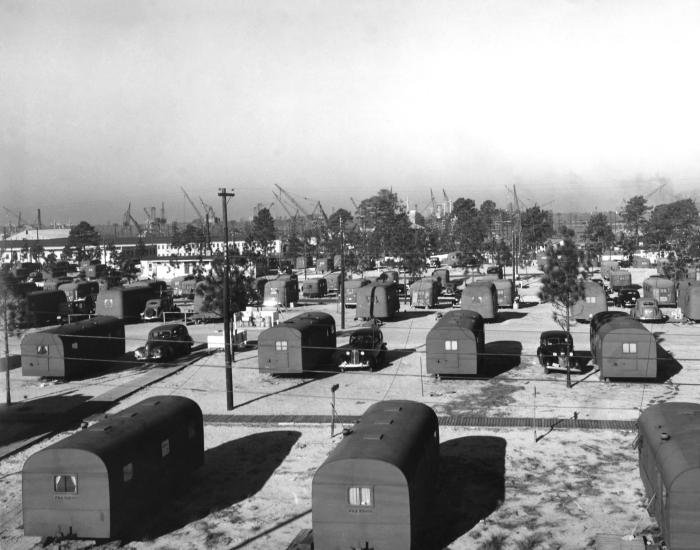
Provided by the Center for Disease Control's (CDC), National Institute for Occupational Safety and Health (NIOSH), this historic 1943 image depicted an aerial view of a North Carolina workcamp trailer park, which was located onsite at an industrial workplace.